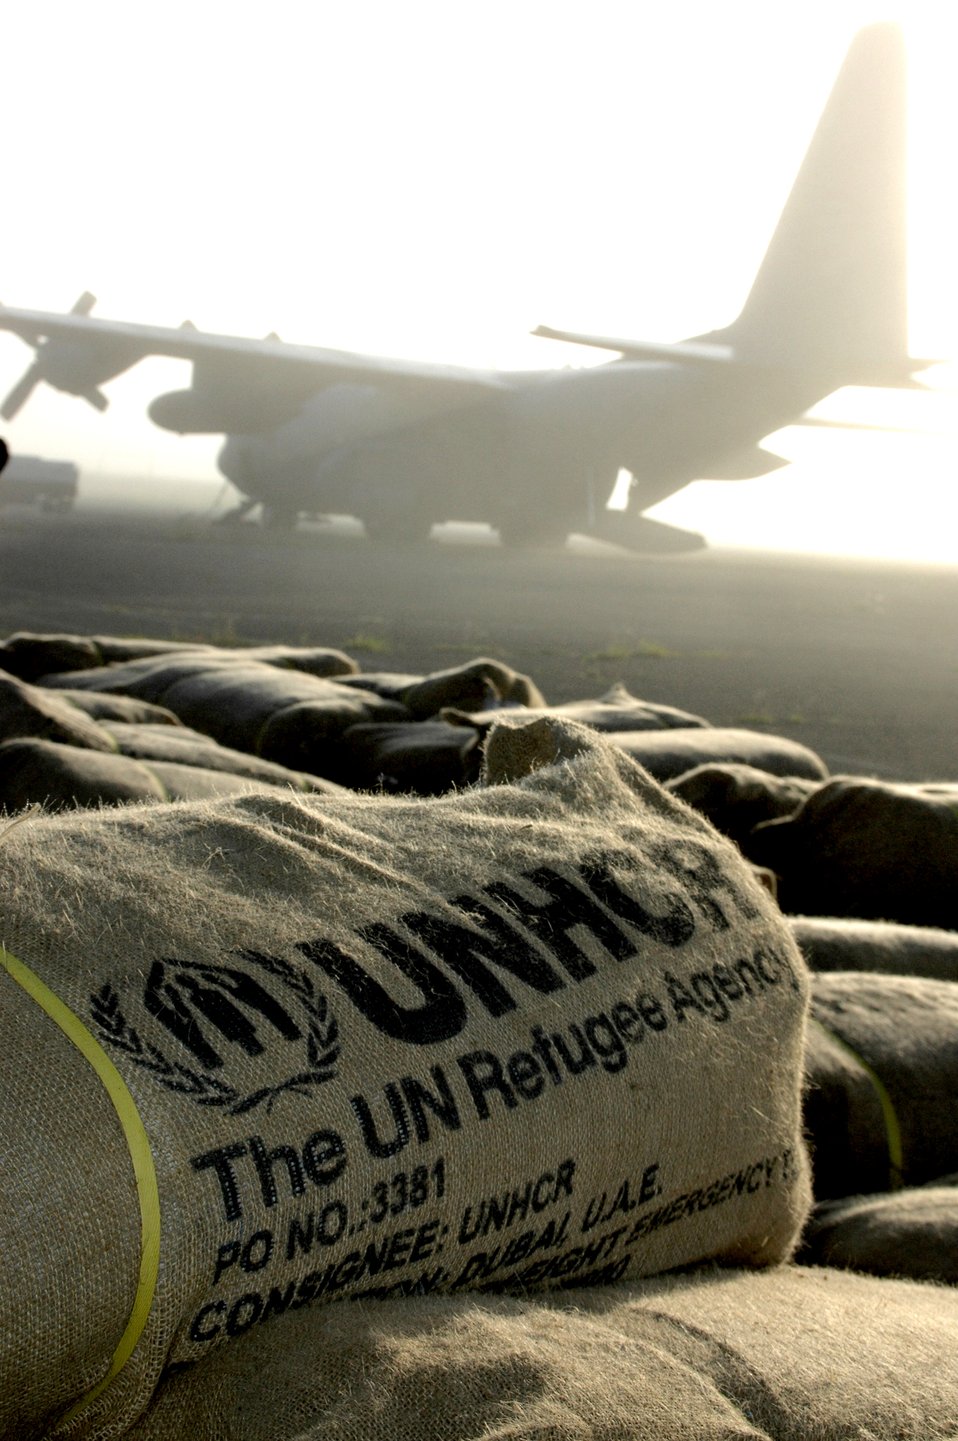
Operation Unity Knight brings relief to Kenya

Humanitarian and civic assistance supplies are ready to be palletized and loaded onto a C-130 Hercules for an airdrop Dec. 9. The Air Force is dropping more than 240,000 pounds of supplies to flood refugees in eastern Kenya. After weeks of rain in Dadaab region in Kenya, camps housing about 160,000 Somali refugees who fled their country 14 years ago following an uprising were damaged and many crops were destoyed. The Combined Joint Task Force - Horn of Africa military officials monitoring the developments began Operation Unity Knight and sent an Air Force C-130 assigned to the 379th Air Expeditionary Wing based in Southwest Asia because the roads in the area were impassable.